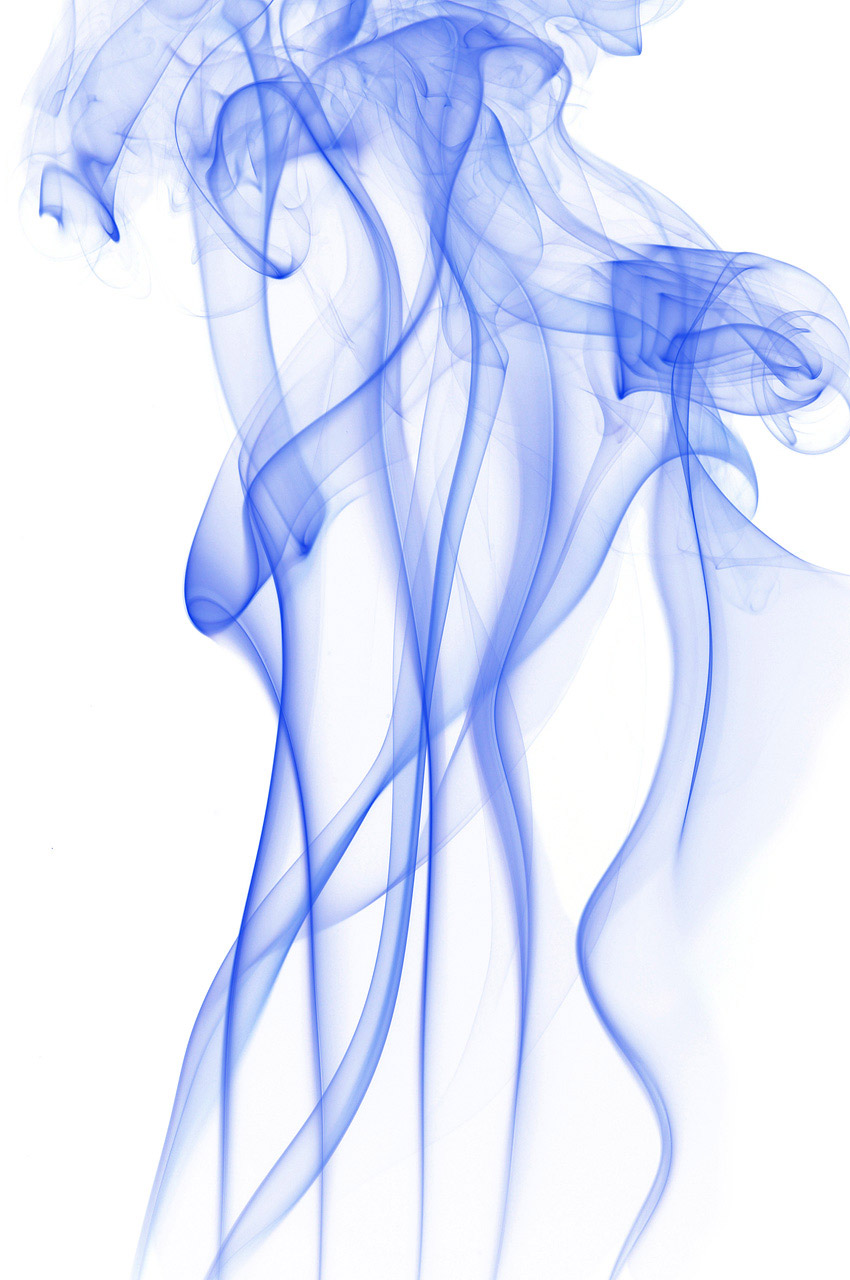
Silhouette of colored smoke

Female silhouette with colored smoke.